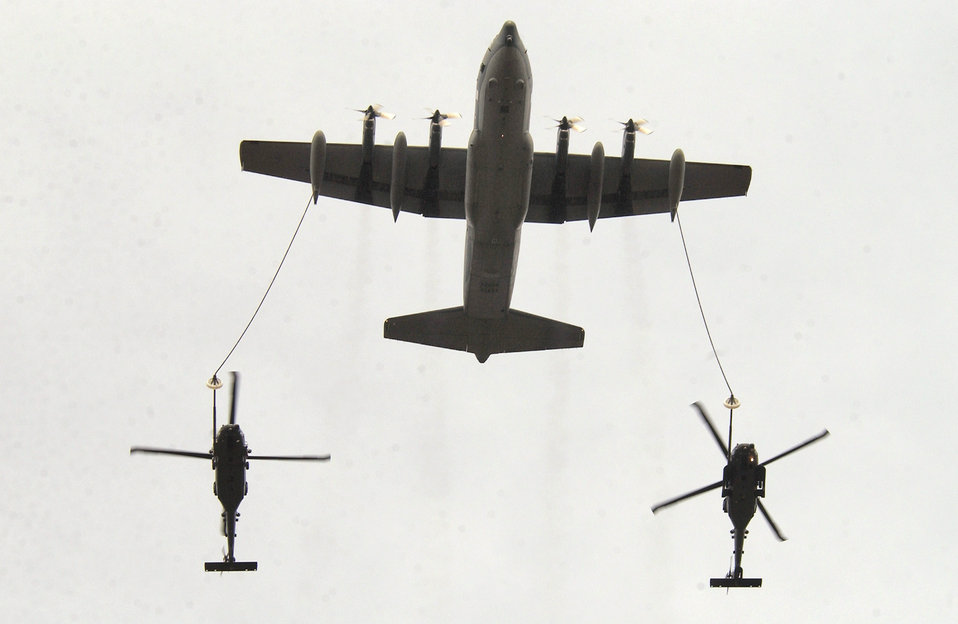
SAREX 05

OVER ALASKA -- Two HH-60G Pave Hawk helicopters are refueled by an Alaska Air National Guard HC-130 P/N aircraft during Arctic Search and Rescue Exercise 05. The exercise aimed to improve interoperability among U.S., Canadian and Russian pararescue forces.